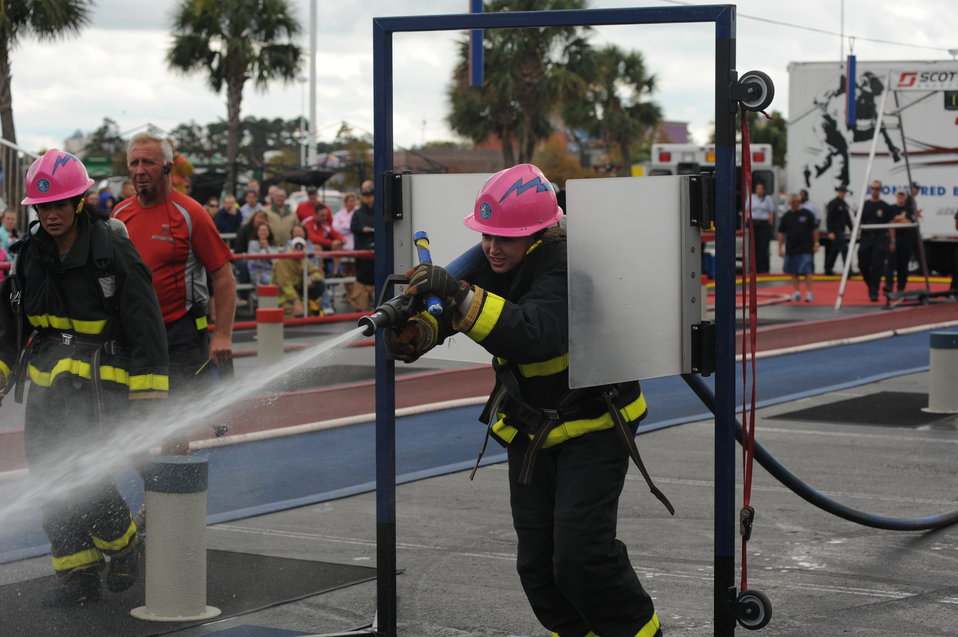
Air Force firefighters aim for the gold

Senior Airman Jessica Condon, (right) a firefighter from the Air Force Academy, Colo., tries to knock down a target with a stream of water during the World Firefighter Combat Challenge XX at Myrtle Beach, S.C., Nov. 17, 2011. Both Condon and Elaine Perkins (far left) are members of the two-time world champion Fire Fembots team, which is a combined team of firefighters from the Air Force Academy and Colorado Springs, Colo., fire departments.